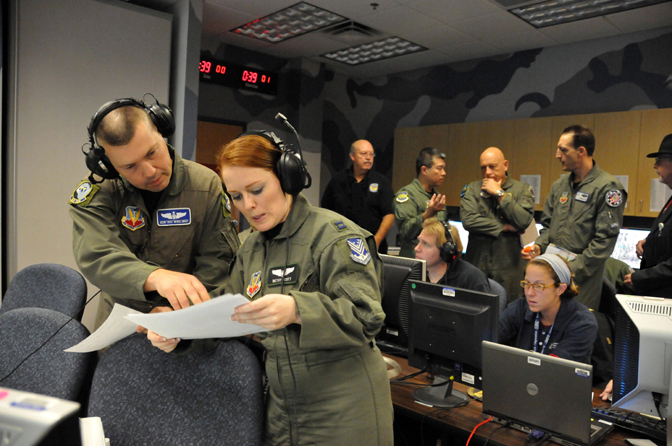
Warfighters to meet in virtual battlespace at Virtual Flag 10-2

Senior Master Sgt. Kevin McRae and Capt. Betsy Scott discuss data during Coalition Virtual Flag, which was held Sept. 18, 2009, at Kirtland Air Force Base, N.M. Virtual Flag 10-2 will take place in March at Kirtland AFB. It is a seven-day exercise connecting simulators and live aircraft in a dynamic battlespace to challenge air, land and sea combatants in theater battle and incorporates multiple Air Force, Navy and Army platforms.